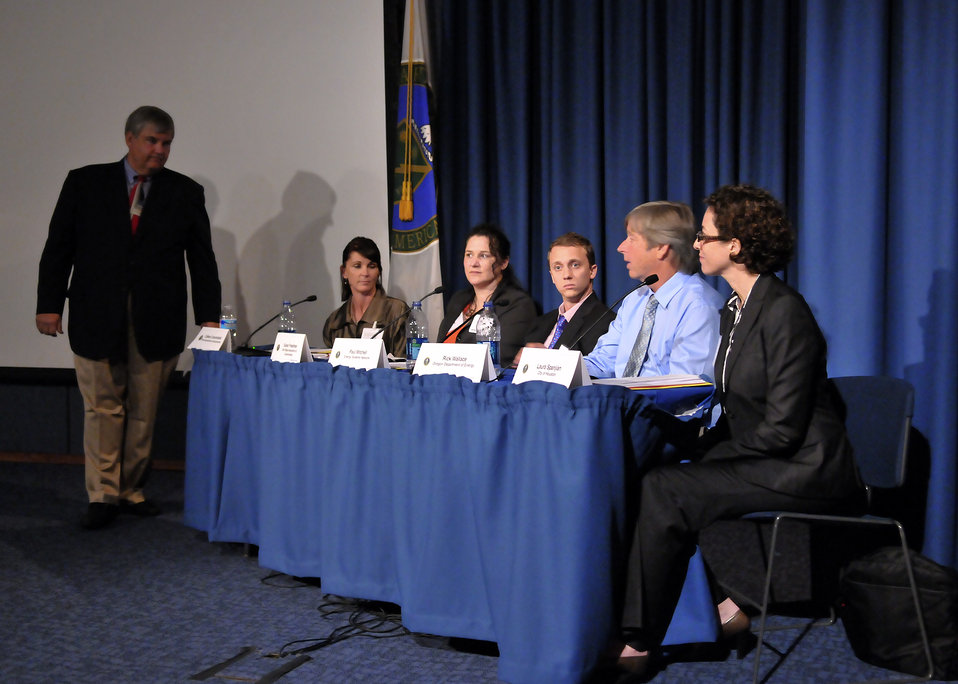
Panel at the EV Cities Workshop